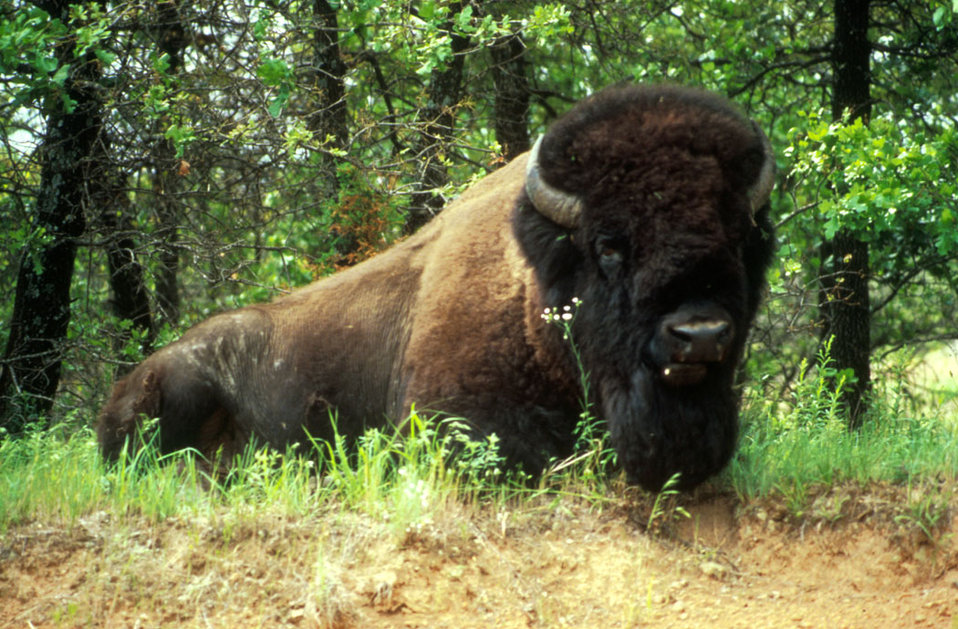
Bison.